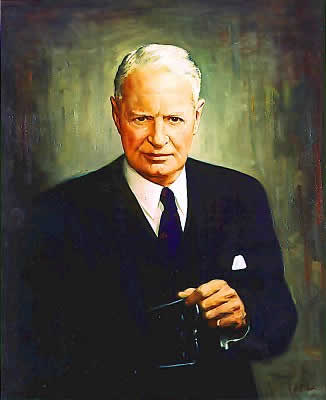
David Lynn served as the seventh Architect of the Capitol

Portrait by Charles J. Fox
Oil on canvas, 29-1/2' x 24-1/2' 1954